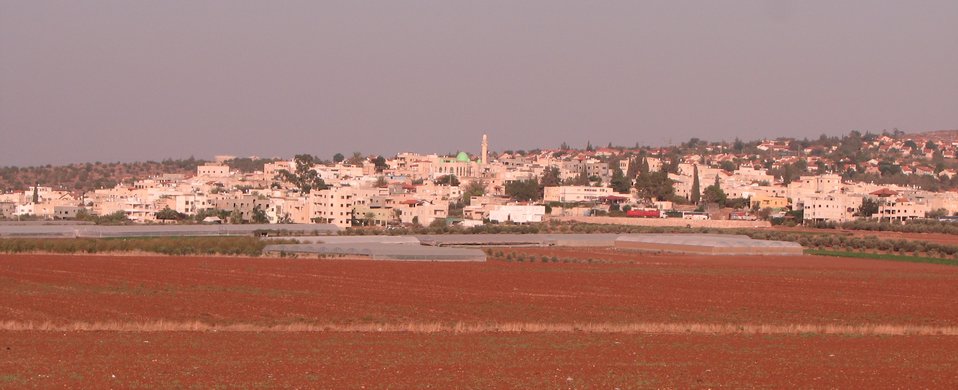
עברית: סנדלה